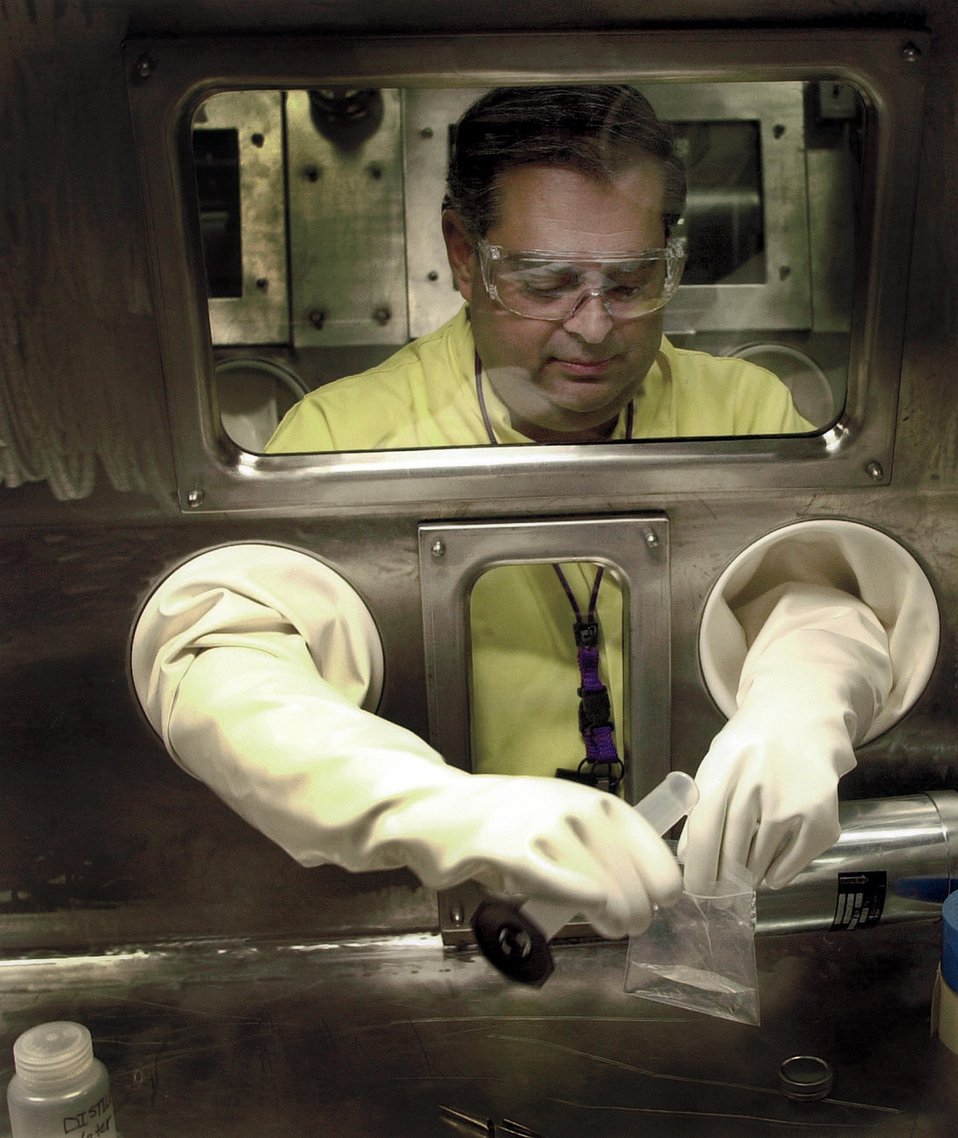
SECRETARY OF ENERGY SPENCER ABRAHAM USING A GLOVE BOX.

SECRETARY OF ENERGY SPENCER ABRAHAM VISITED LANL'S TECHNICAL AREA 55 ON APRIL 19, 2001, WHERE HE WAS GIVEN A BRIEFING AND DEMONSTRATION ON HOW TO WORK IN A GLOVE BOX.